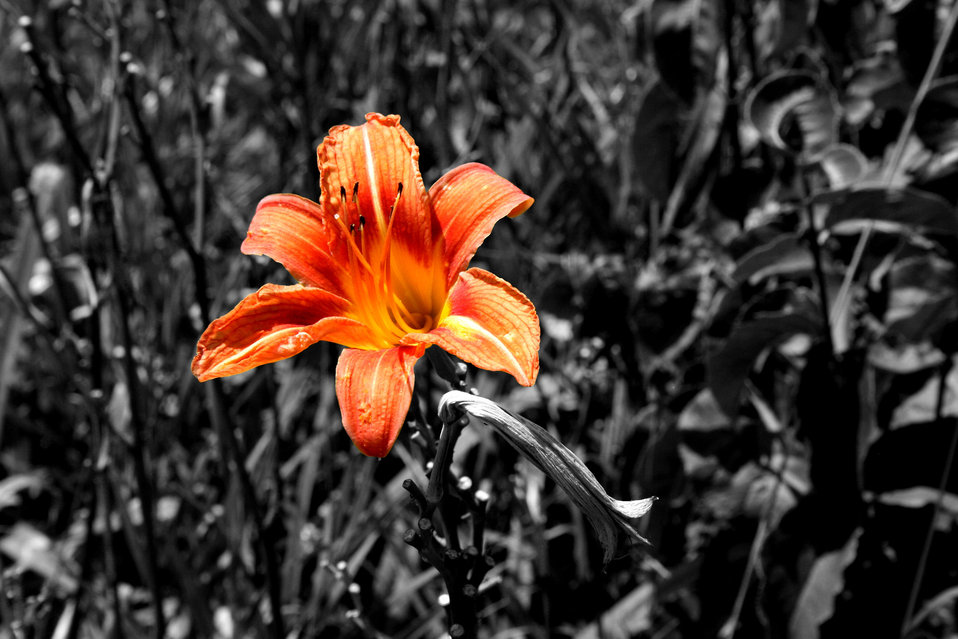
Tiger lily in color with black and white background.